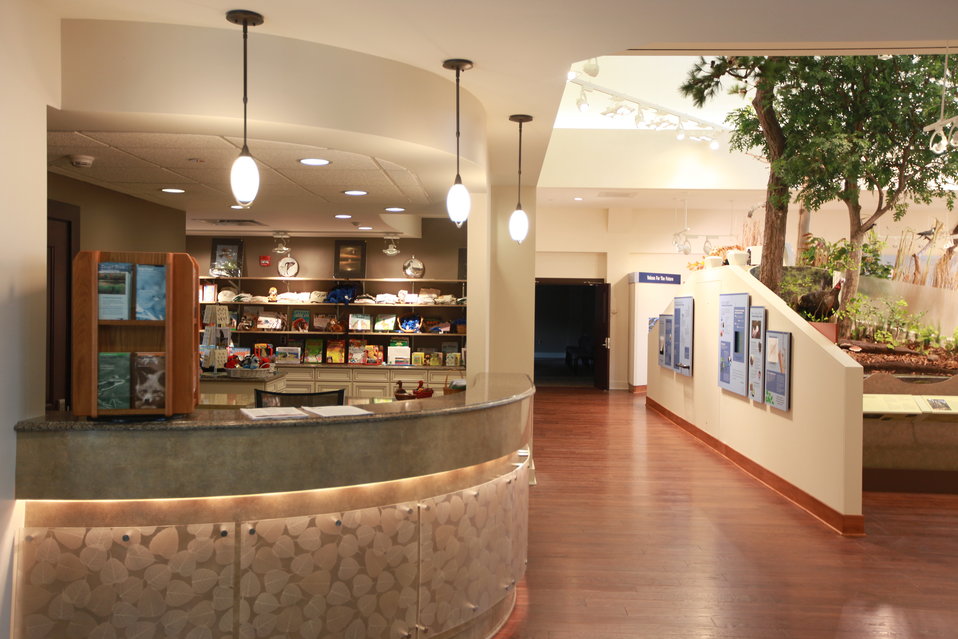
Gift Shop

Friends Group gift shop is ready for business (open first week of December, 2011)